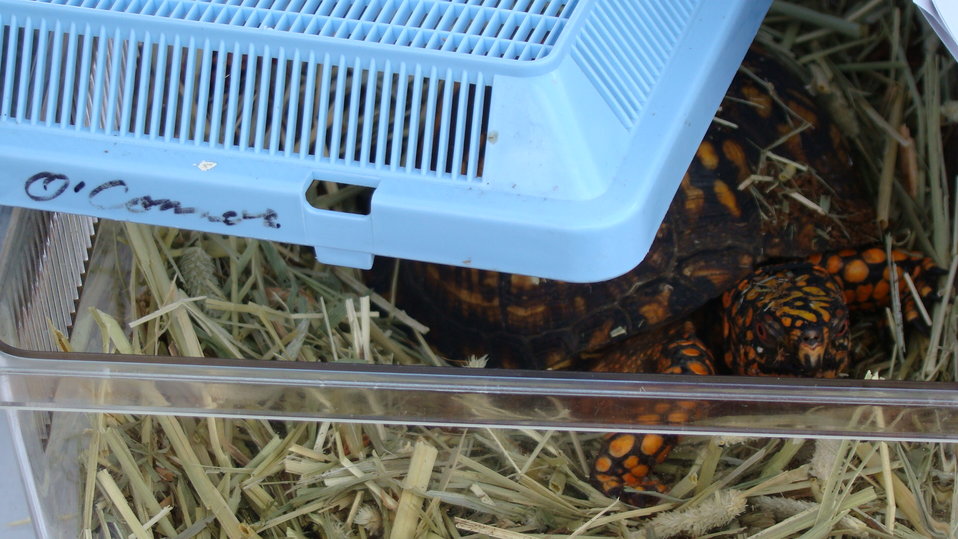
Rappahannock River Valley NWR 15th Anniversary

Wildbunch Wildlife Refuge displays rehabilitated wildlife.